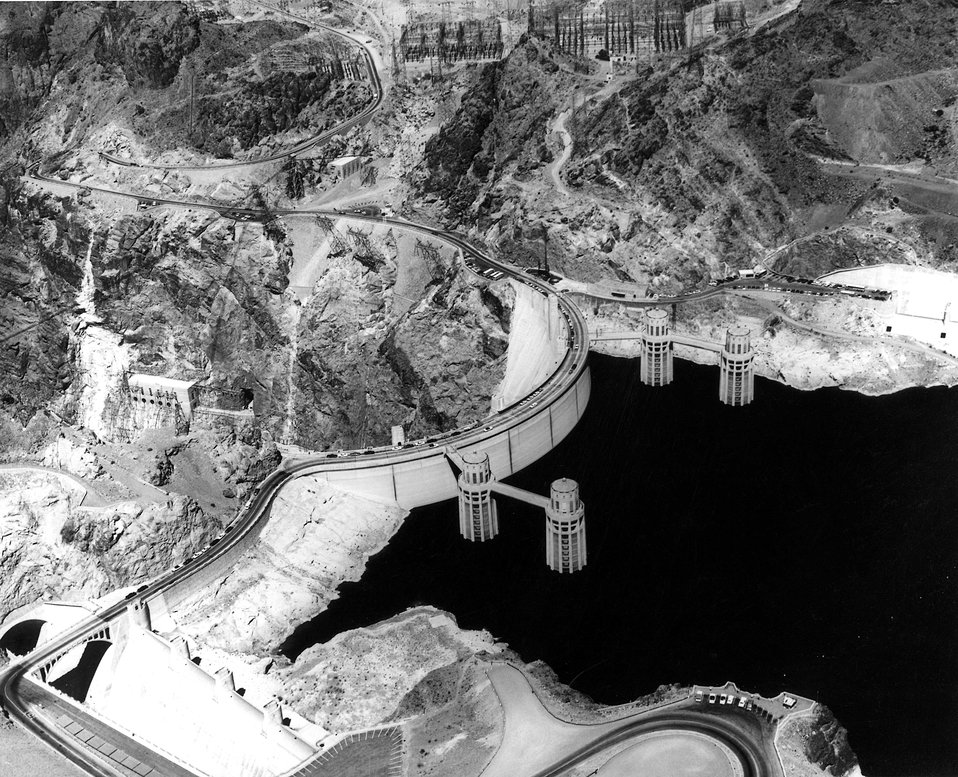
Aerial view looking southwest to Hoover Dam and Lake Mead. The Arizona spillway is shown in the left foreground. c. 1977